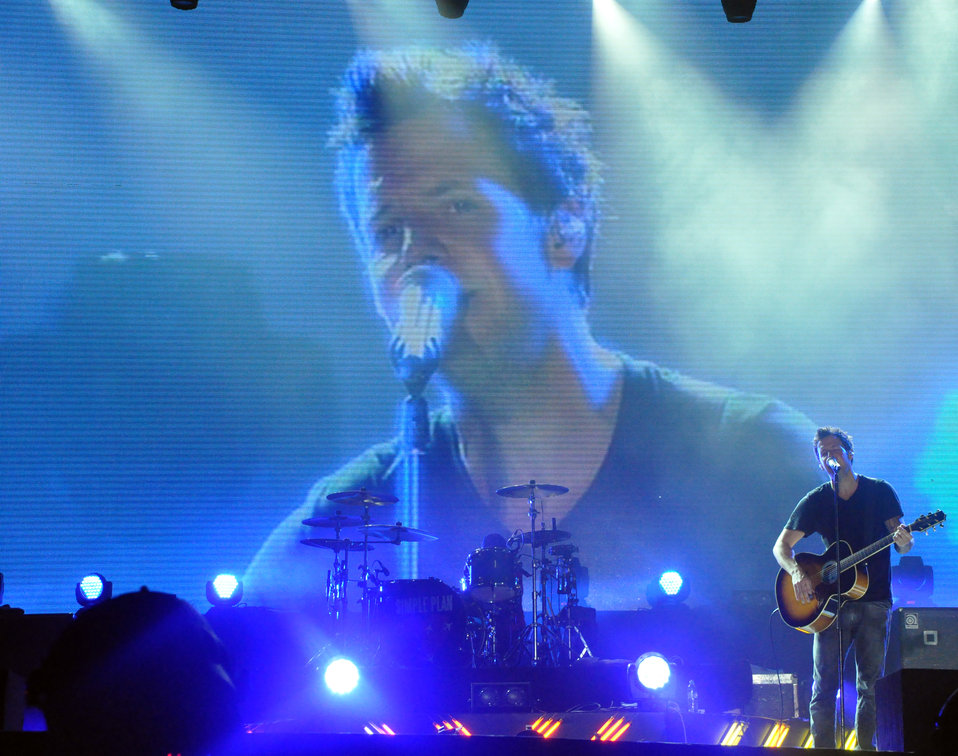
Simple Plan performs at MTV EXIT concert in Hanoi against human trafficking

USAID co-sponsors MTV EXIT concert, campaign against human trafficking